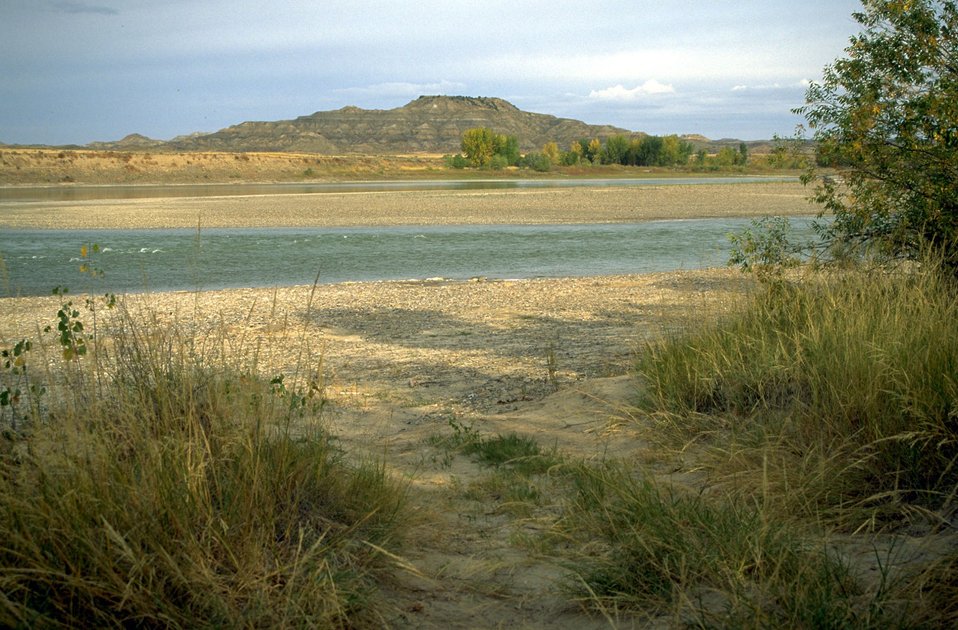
Sheridan Butte along the Yellowstone River